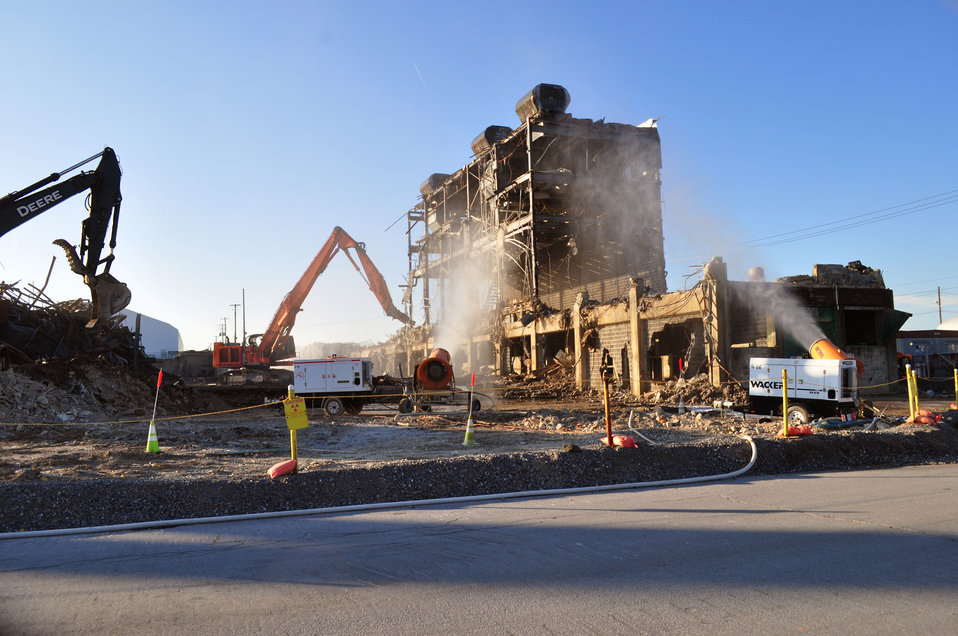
6

K-25 North Tower